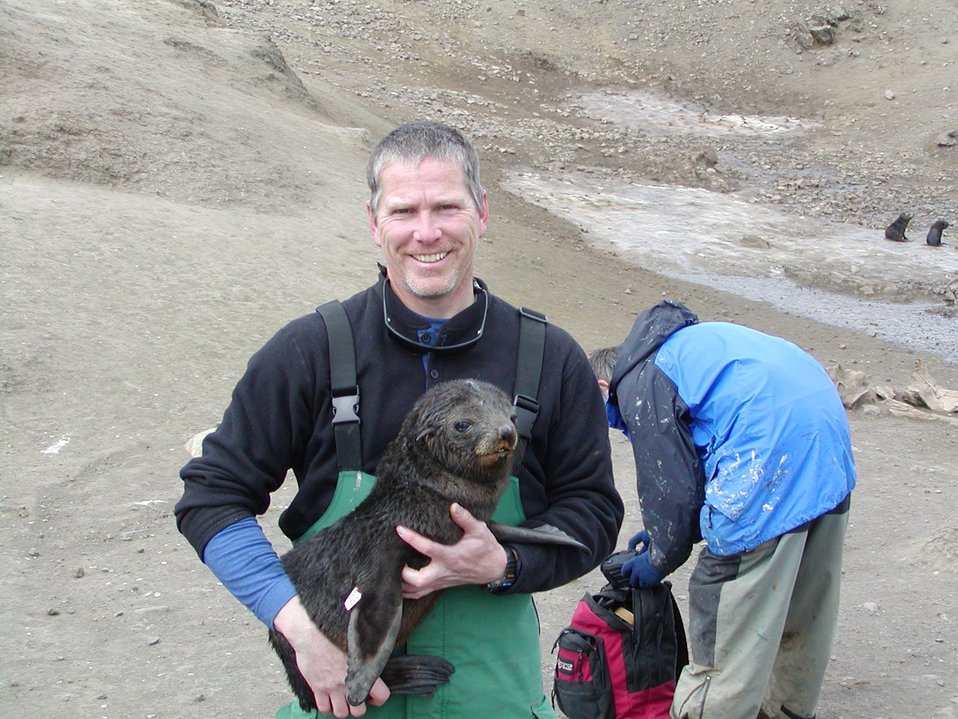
Antarctic fur seal pup